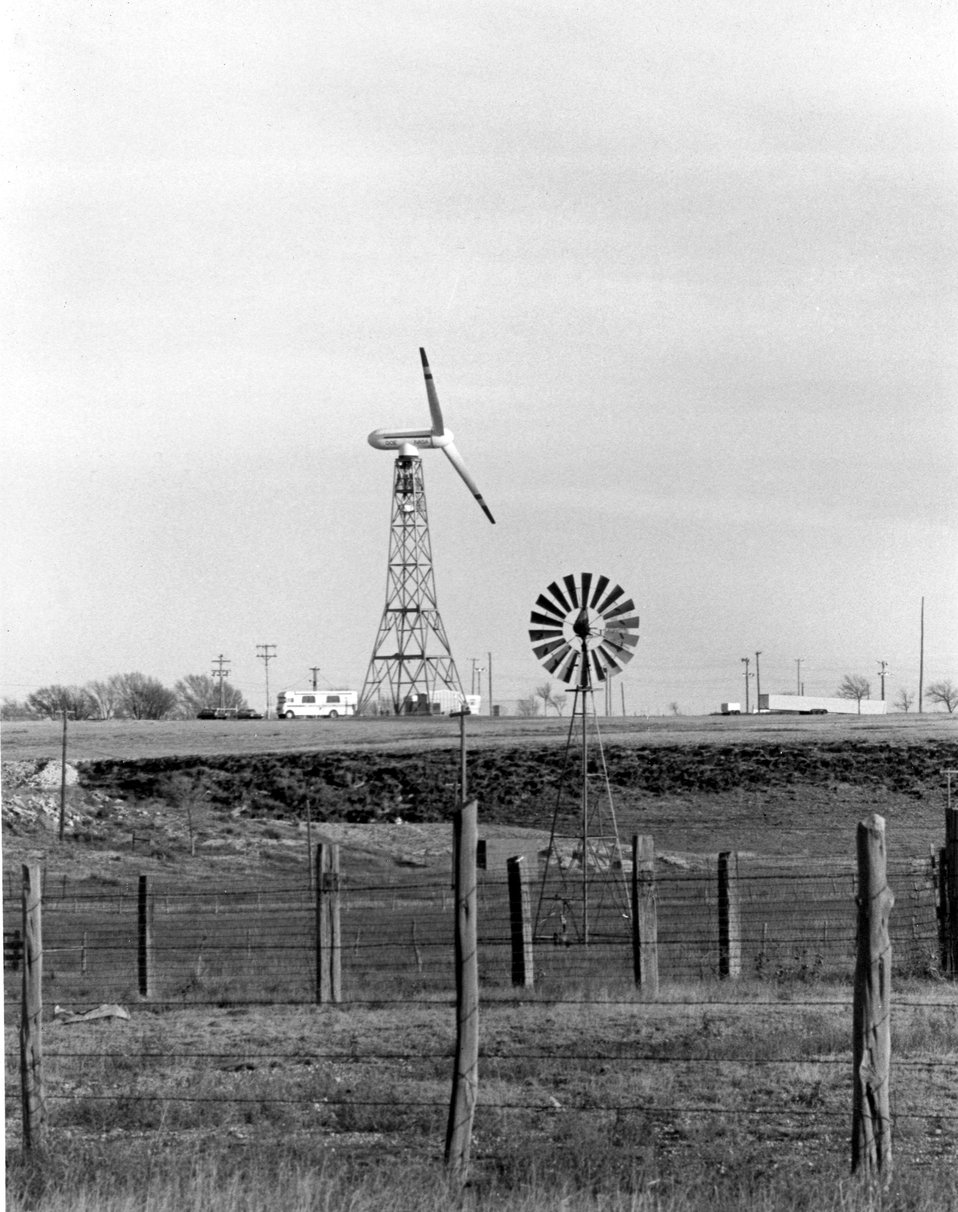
A large wind turbine generator is supplying part of the electric power used by the people of Clayton, New Mexico. c. 1978